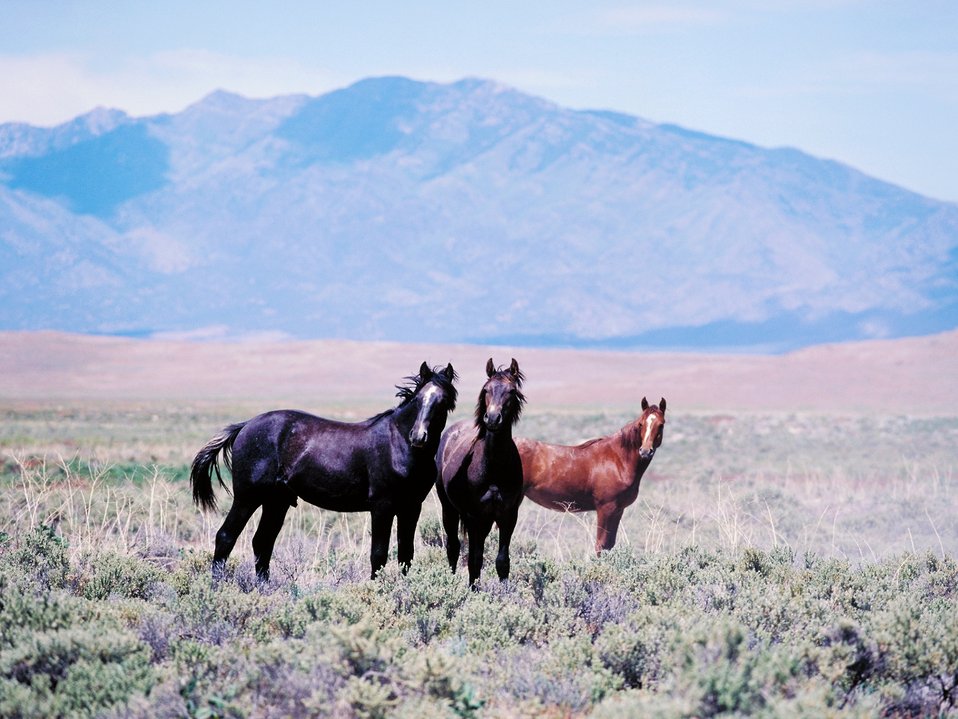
Onaqui Herd near Dugway, Utah.